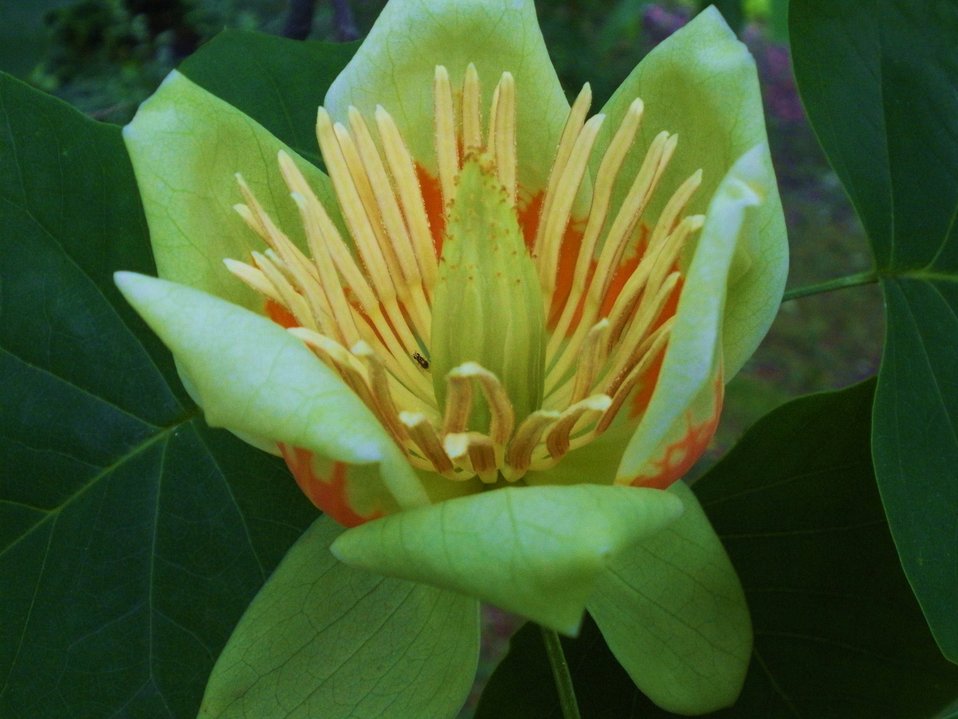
Poplar blossom.